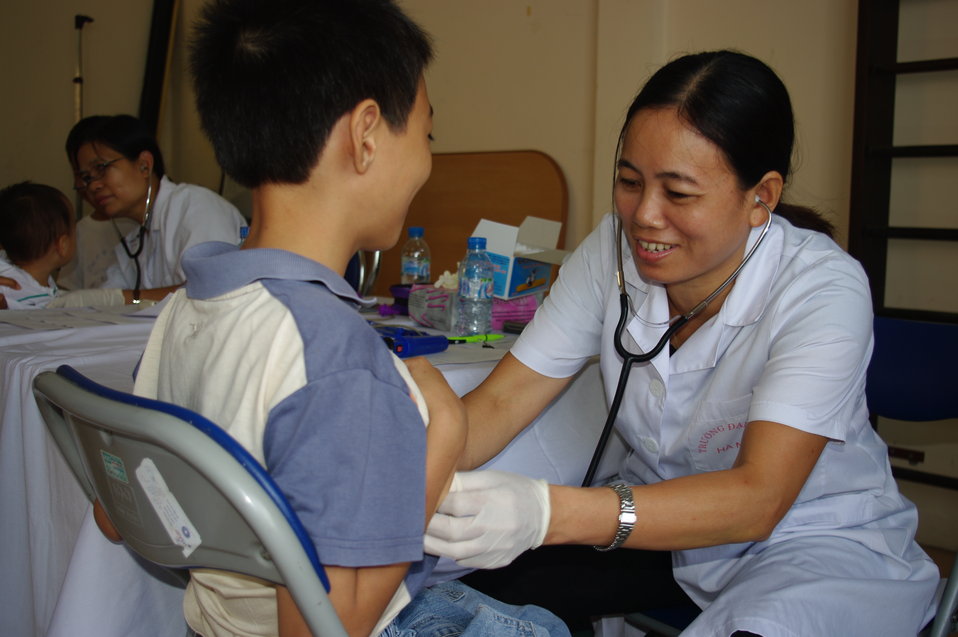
Oprhans and vulnerable children receive free medical check-ups in Hanoi